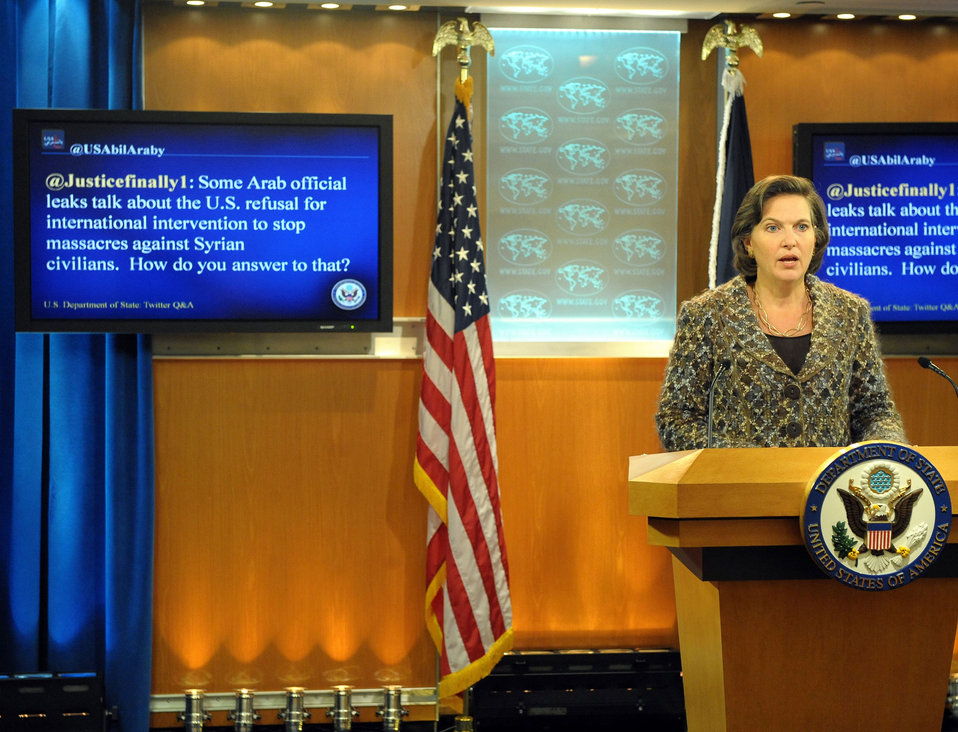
Spokesperson Nuland Responds to a Question from @USAbilAraby

Victoria Nuland, Spokesperson for the U.S. Department of State, answers a question selected from the Department’s official Arabic Twitter feed, @USAbilAraby, on January 6, 2012.